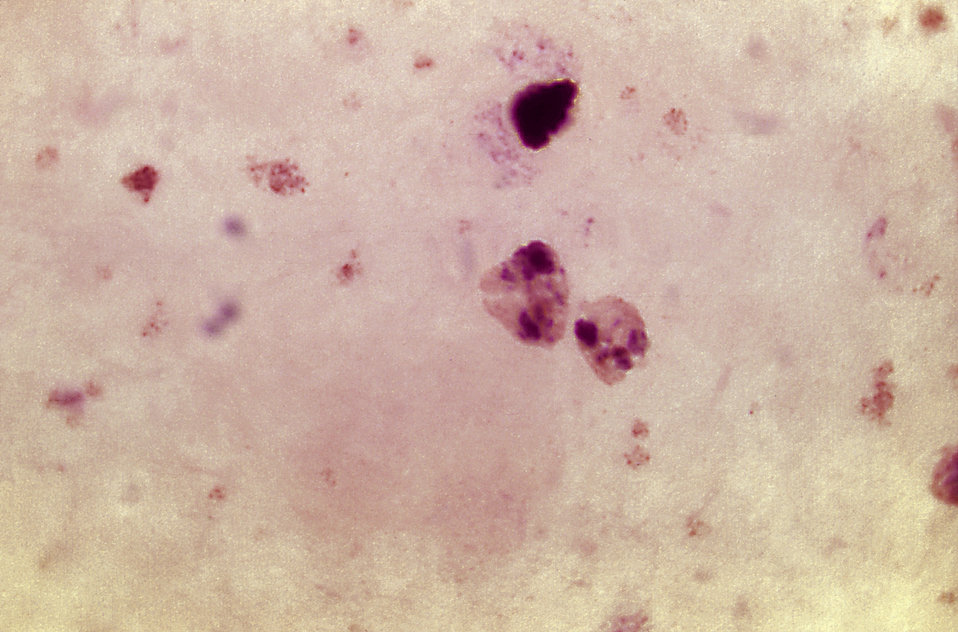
This micrograph contains an ameboid trophozoite of the parasite Plasmodium vivax using Giemsa stain; Magnified 1125x.